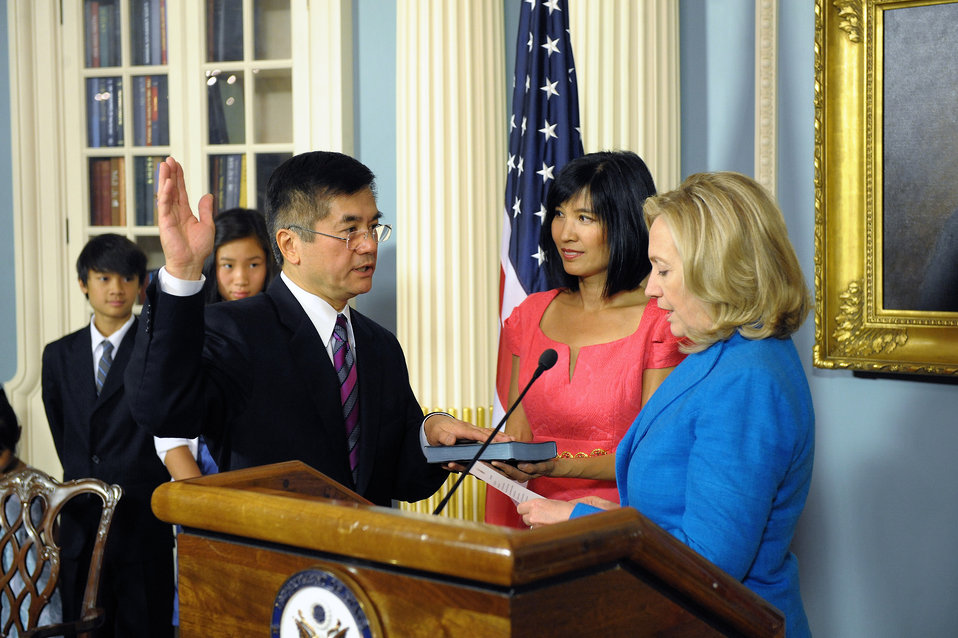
Secretary Clinton Swears in the Honorable Gary Locke as U.S. Ambassador to the People’s Republic of China

U.S. Secretary of State Hillary Rodham Clinton officiates the Swearing In Ceremony for the Honorable Gary Locke, U.S. Ambassador to the People’s Republic of China, at the U.S. Department of State in Washington, D.C., on August 1, 2011.